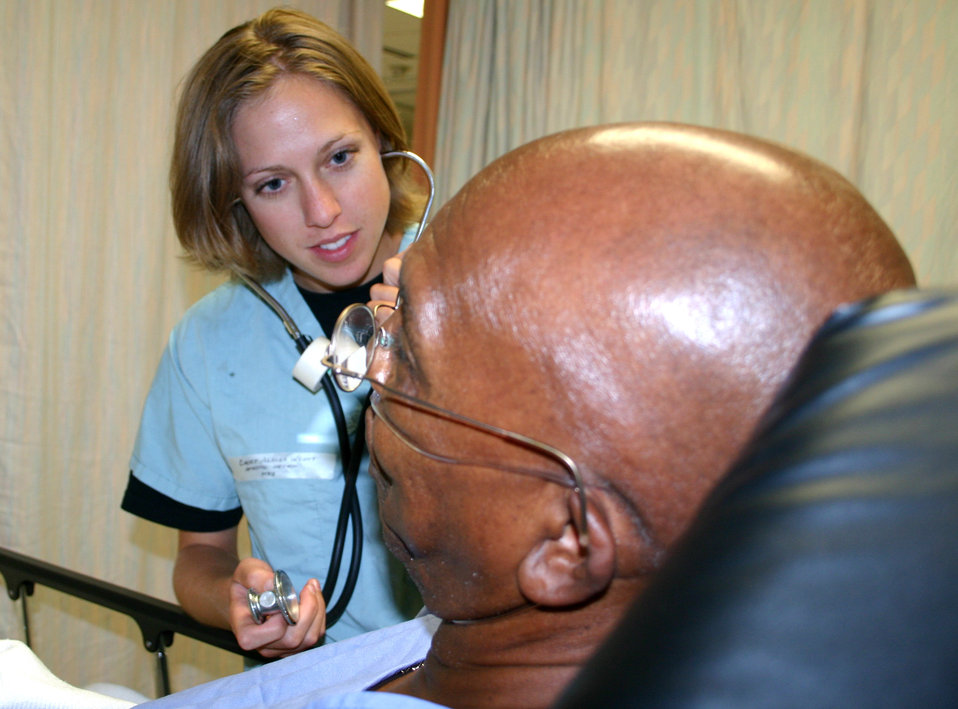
Future of Air Force Medical Service train at Wilford Hall

Cadet 1st Class Alicia Weott checks the vitals signs of retired Chief Master Sgt. Paul Hurd at Wilford Hall Medical Center at Lackland Air Force Base, Texas, on Wednesday, July 5. Cadet Weott, a ROTC cadet from Montana State University, is a student in the Operation Air Force: Nurse Orientation Program. She is learning basic operations of an Air Force Medical facility.